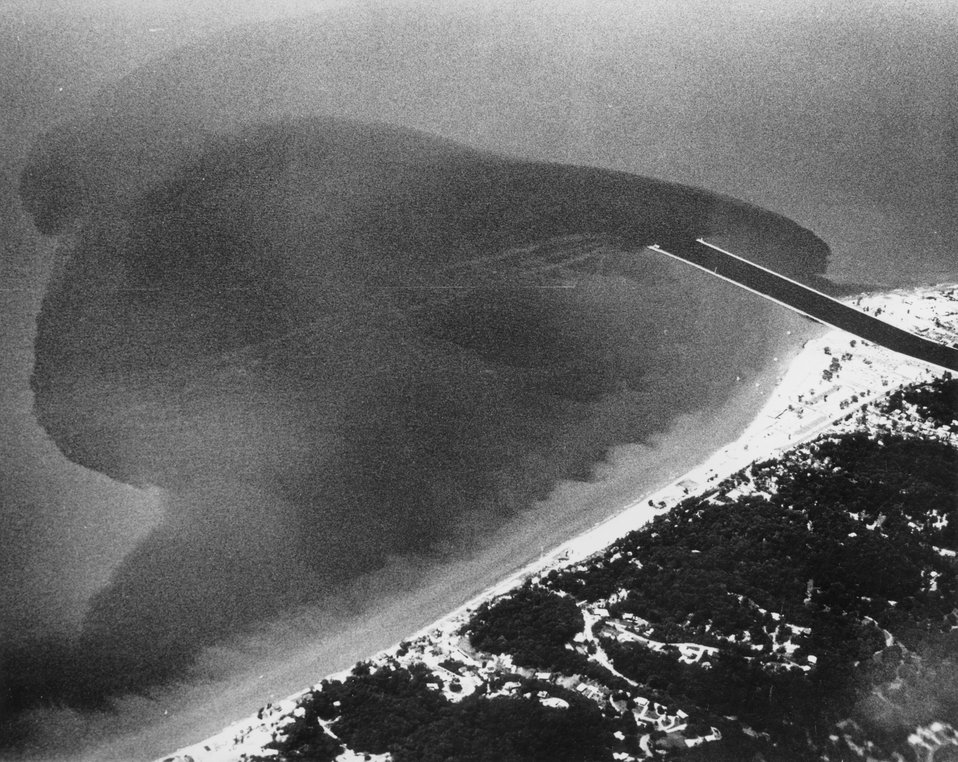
The photo shows the pollution 'plume' of the Grand River as it empties into Lake Michigan at Grand Haven.
c.1972